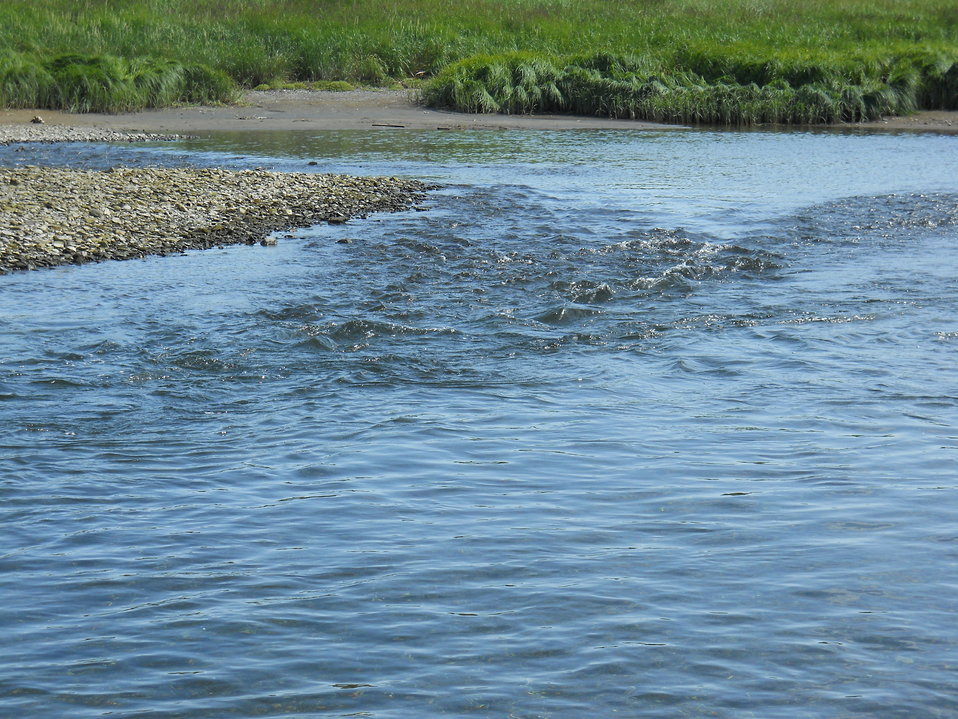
Buskin River

Credit: USFWS
Photo taken by a Salmon Camp participant during a nature photography activity.

Source and Contact: Kodiak National Wildlife Refuge